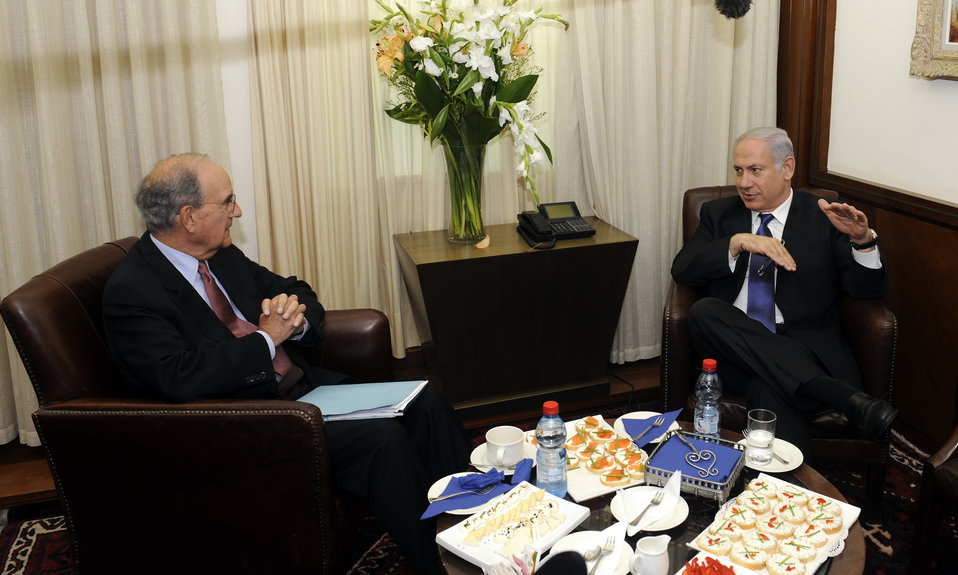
Special Envoy Mitchell Meets With Israeli Prime Minister Netanyahu

U.S. Special Envoy for Middle East Peace George Mitchell meets with Israeli Prime Minister Benjamin Netanyahu at the Prime Minister's office in Jerusalem onJuly 16, 2010.